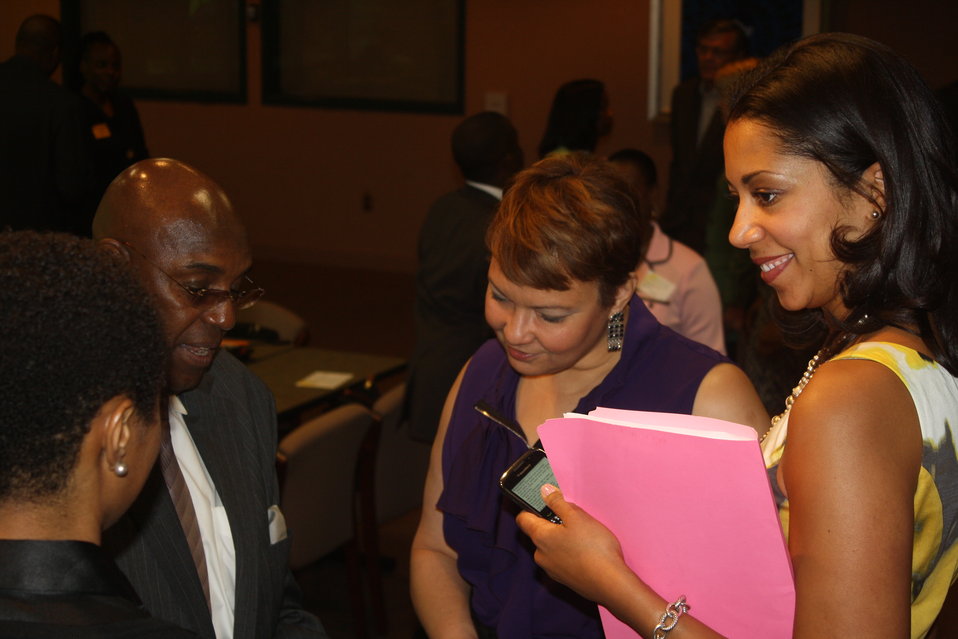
Faith-Based and Neighborhood Partnership launch at Atlanta's Carter Center